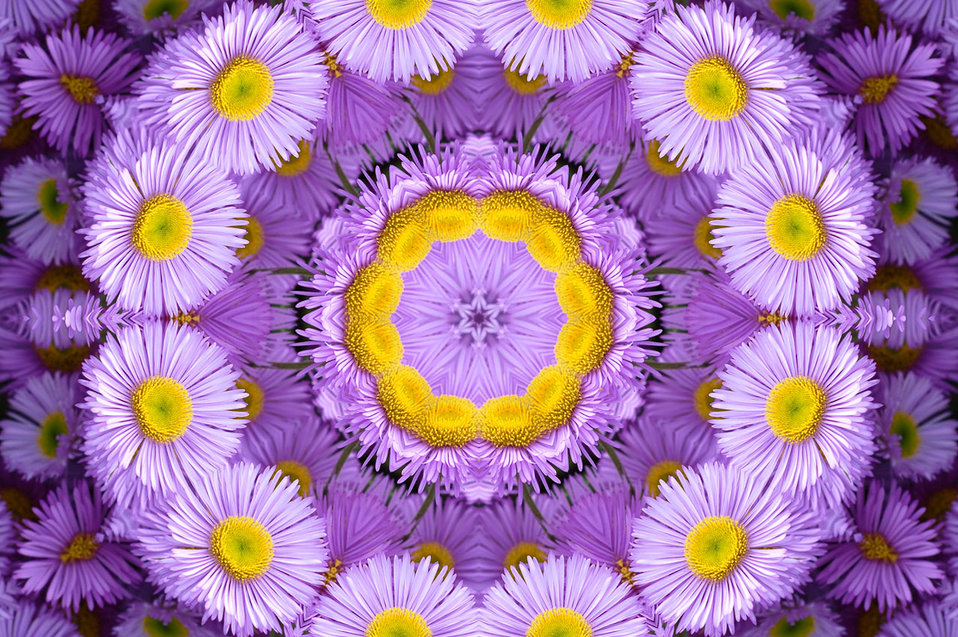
Purple fantasy

Floral background - purple daisy flowers.